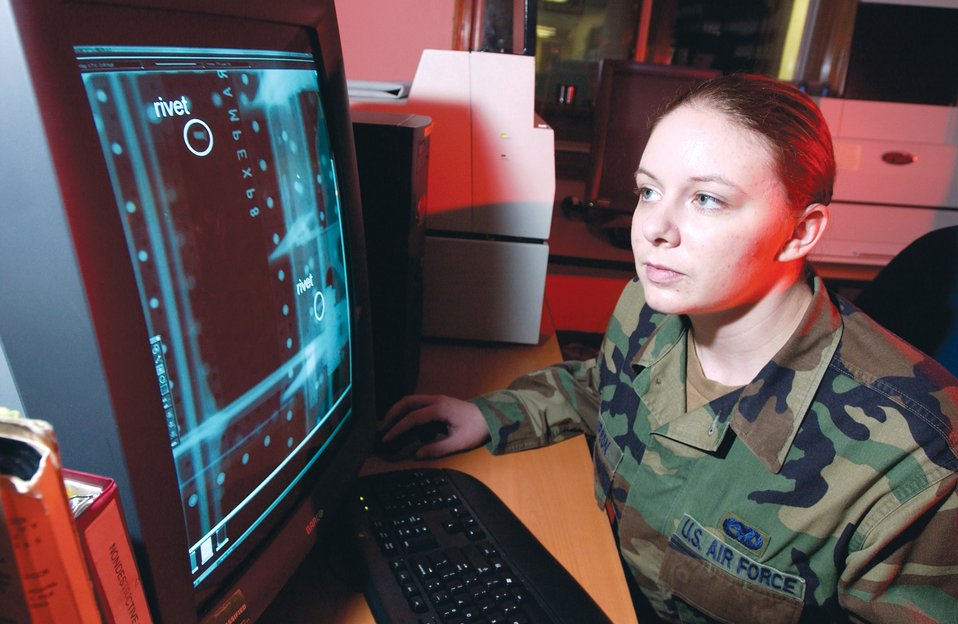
Elmendorf unit saves thousands

Senior Airman Jeri Thompson studies a digital X-ray from an aircraft part at Elmendorf Air Force Base, Alaska, on July 10. By switching from film to digital X-rays to analyze aircraft, the 3rd Equipment Maintenance Squadron is saving the Air Force more than $200,000 a year and no longer produces hazardous waste from processing film. Airman Thompson is a nondestructive inspection laboratory technician at the squadron.